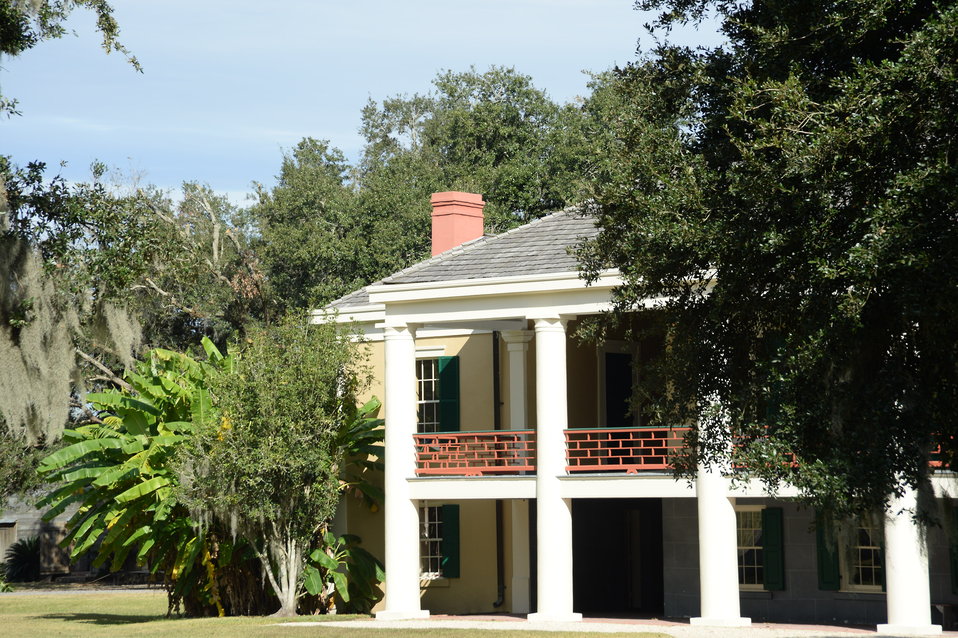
There are many scenic views surrounding New Orleans, LA on Tuesday, Nov. 19, 2013.